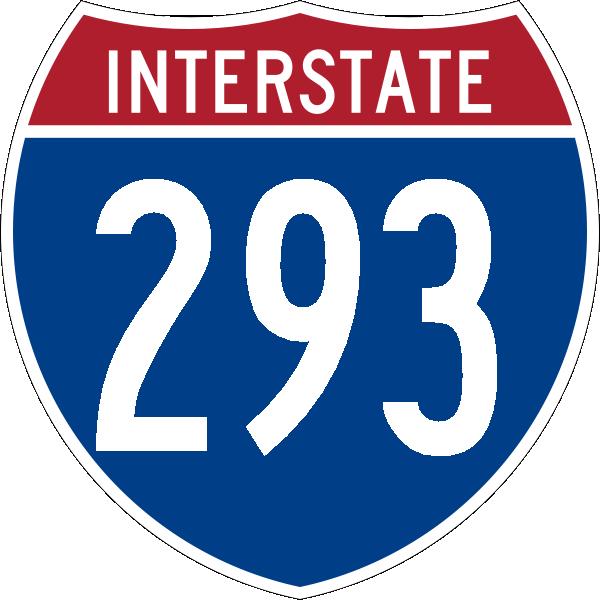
A narrow 293 shield for NH.